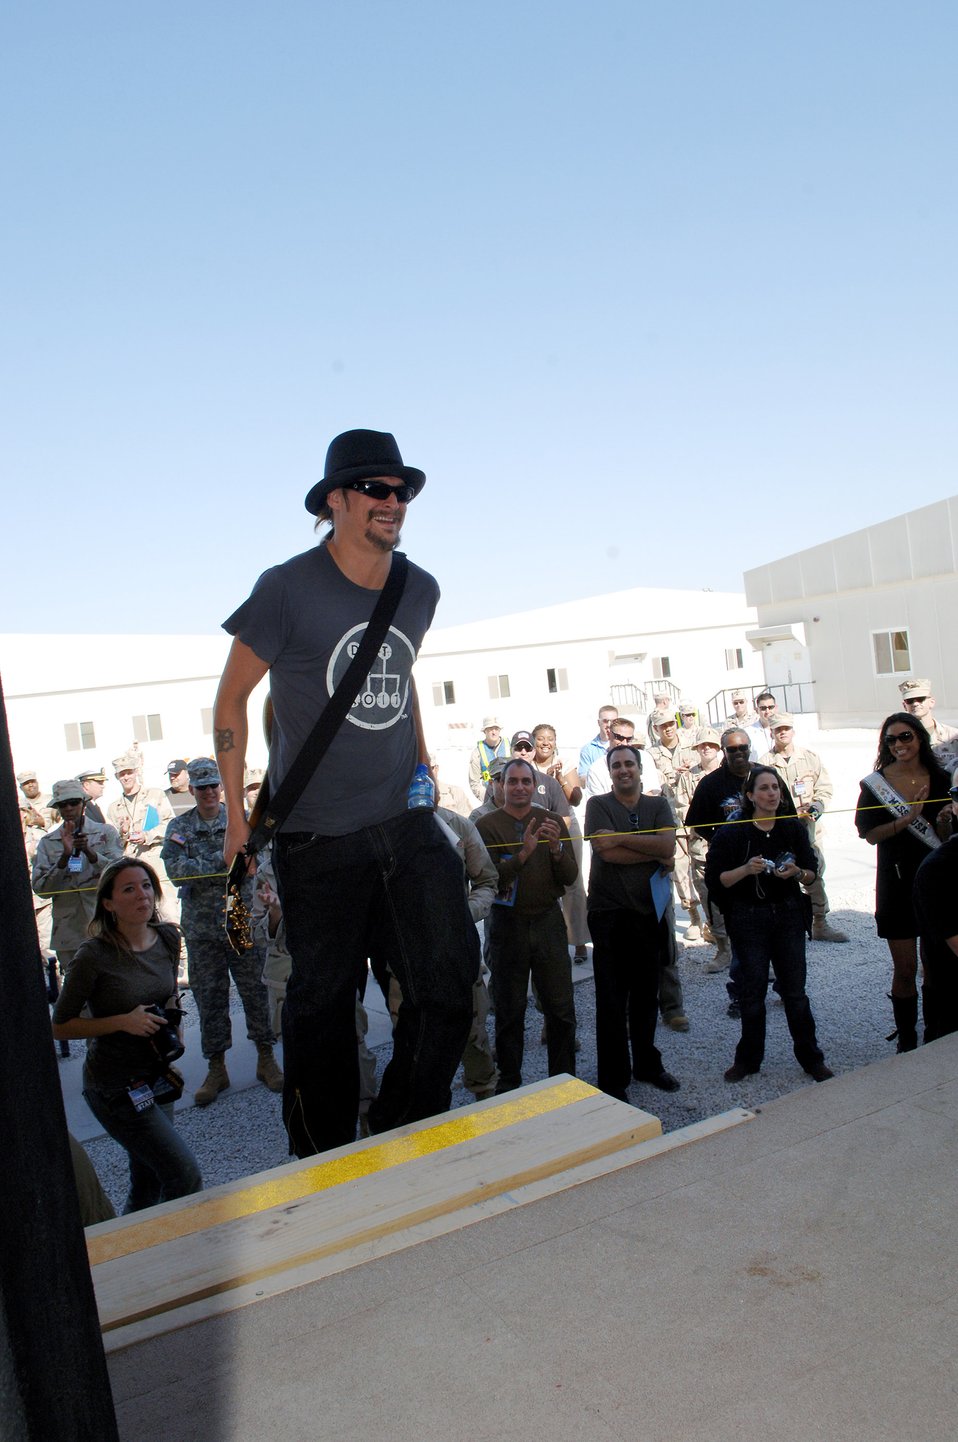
USO group visits servicemembers in Southwest Asia

Kid Rock enters the stage right before performing for troops at the 379th Air Expeditionary Wings Memorial Plaza Dec. 17 at a Southwest Asia air base. He is part of the United Service Organizations 2007 holiday tour.